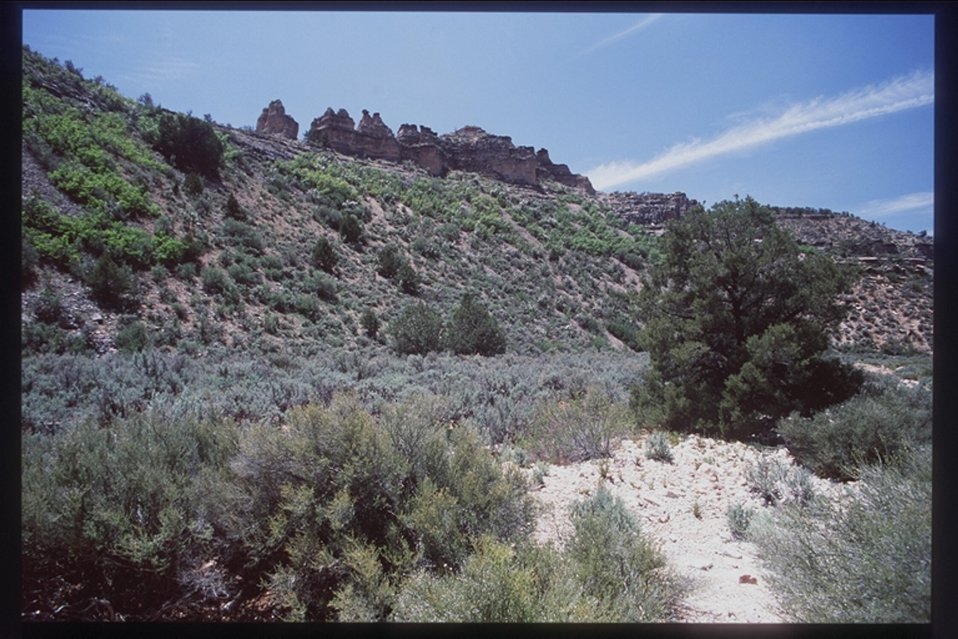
Trees and mountains in a greener part of Arizona, the Grand Canyon Parashant National Monument.